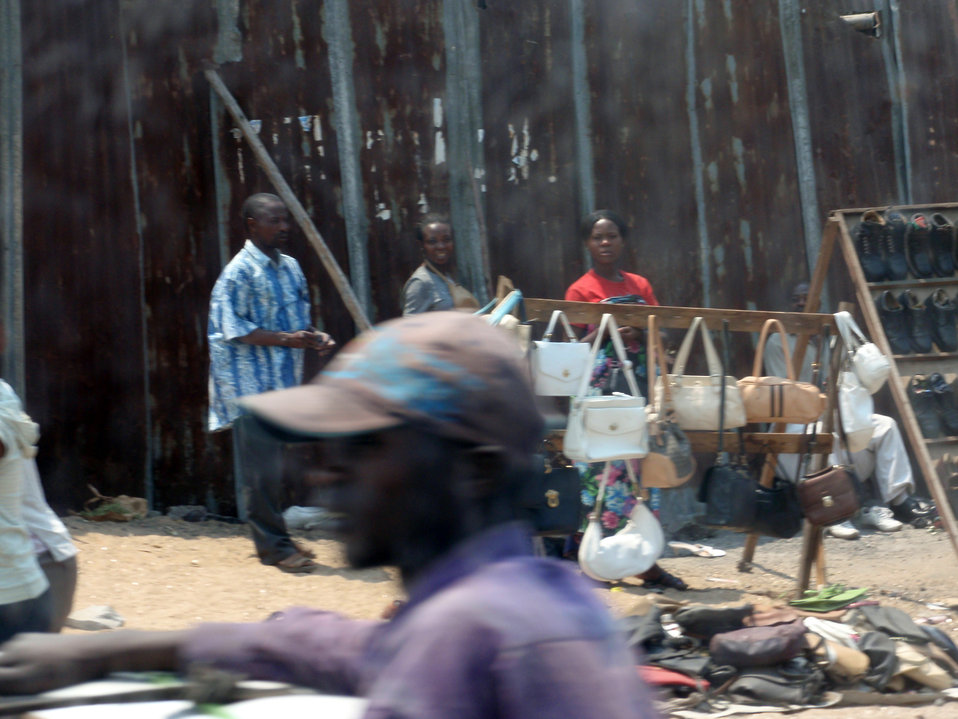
Behind the Scenes: Goma, Democratic Republic of Congo

Vendors sell purses and shoes in Goma, Democratic Republic of Congo August 11, 2009, the same day that the U.S. Secretary of State Hillary Rodham Clinton visited.